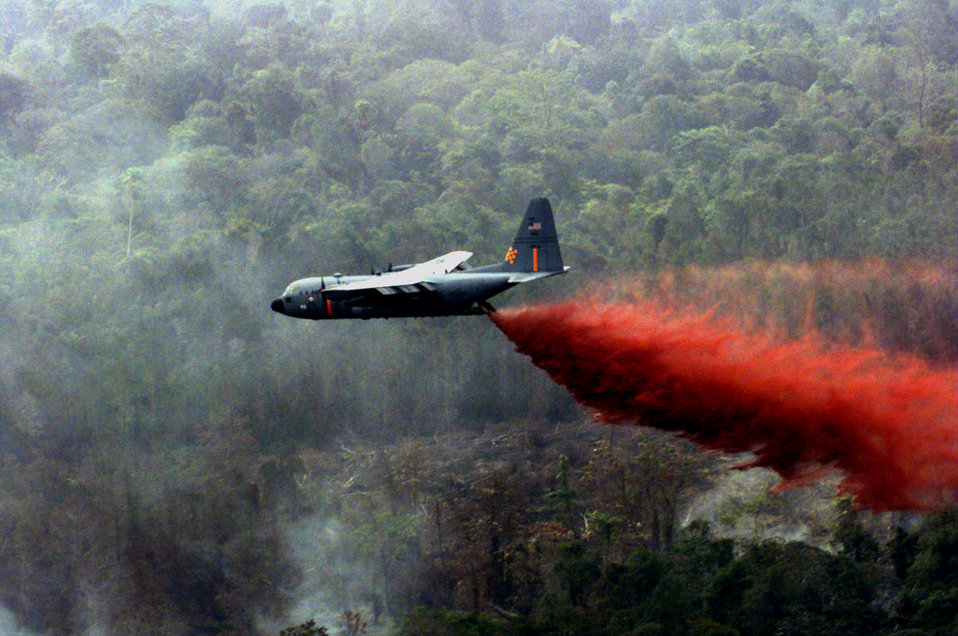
Fighting wildfires

FILE PHOTO -- Air National Guard C-130 Hercules equipped with modular airborne firefighting systems, similar to this one, are dropping thousands of gallons of retardant on the wildfires in Southern California. The fires have destroyed more than 830 homes and burned out more than 500,000 acres. California officials said the fires are responsible for at least 15 deaths.